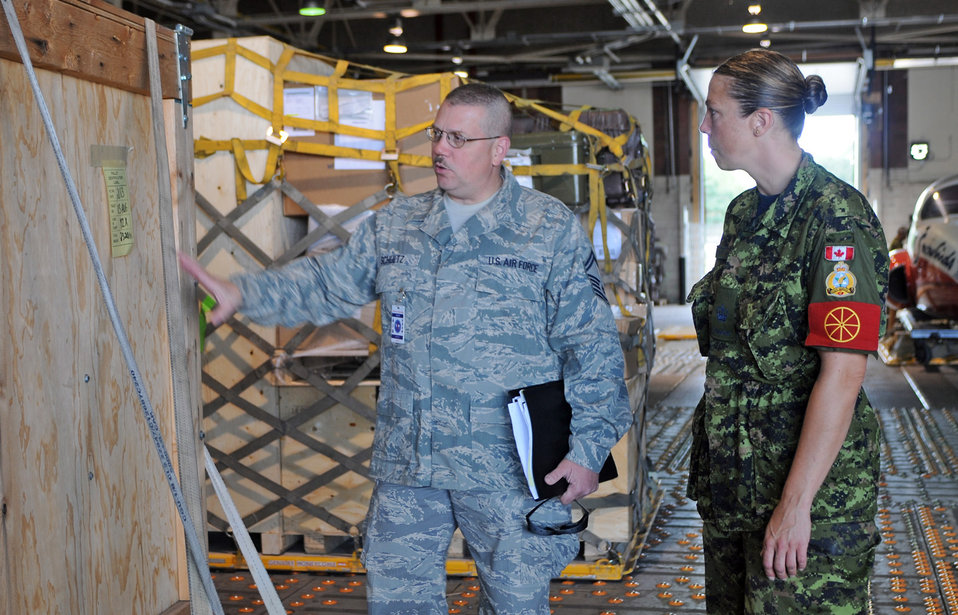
Dover reservists work to form Canadian sister squadron program

Senior Master Sgt. Dan Schultz discusses aerial port operations Aug. 24 with Canadian Royal Air Force Warrant Officer April Roach of the 2 Air Movements Squadron, a unit of the 8 Wing at Canadian Forces Base Trenton, Ontario. Ten aircrew members from Air Force Reserve Command's 512th Airlift Wing at Dover Air Force Base, Del., flew to the Canadian base to spend three days with Royal Canadian Air Force members to forge a partnership and identify future training opportunities for flying, aerial port operations, airlift control and maintenance procedures. Sergeant Schultz is the NCO in charge of the 46th APS ramp at Dover AFB.